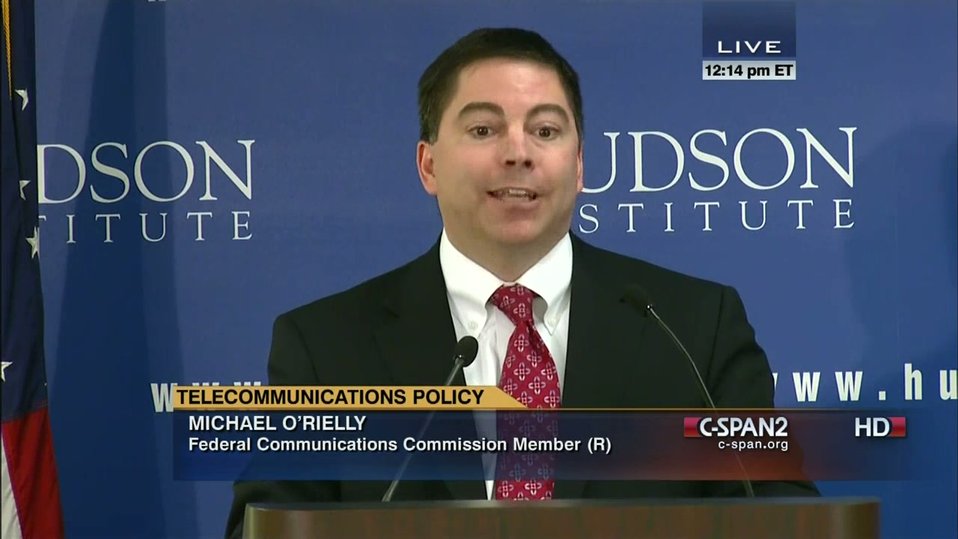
1.27.2014 Hudson Institute

FCC Commissioner Mike O’Rielly gives remarks at The Hudson Institute.
1/27/14